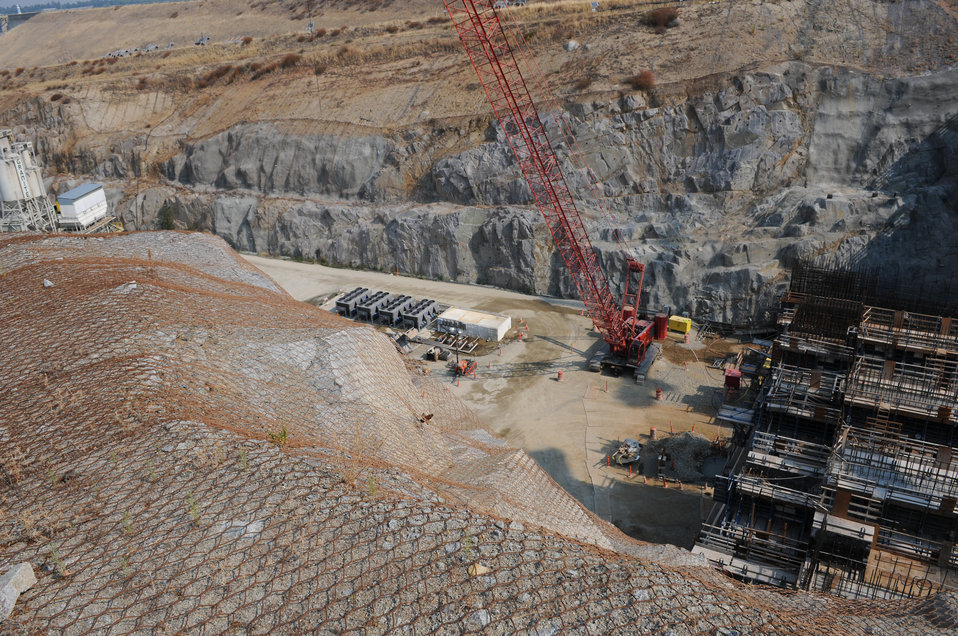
A view of the fall

A view from the rim of the Folsom Dam auxiliary spillway pit in Folsom, Calif., where a vehicle plunged more than 100 feet into the construction site July 30, 2013. Employees of the project contractor, Granite Construction Inc., were the first to respond to the incident and safely extracted the driver from the vehicle. An electrical cable supplying power to the project was the only damage to the construction site. Work is expected to resume during the evening of July 30.